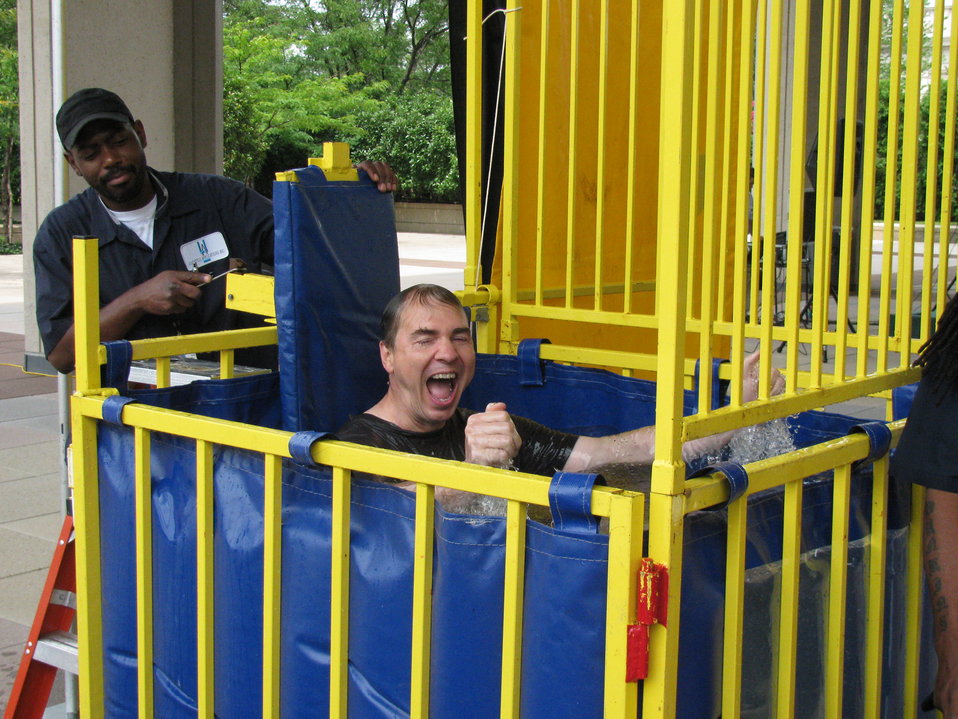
Matt Rogers in the dunk tank